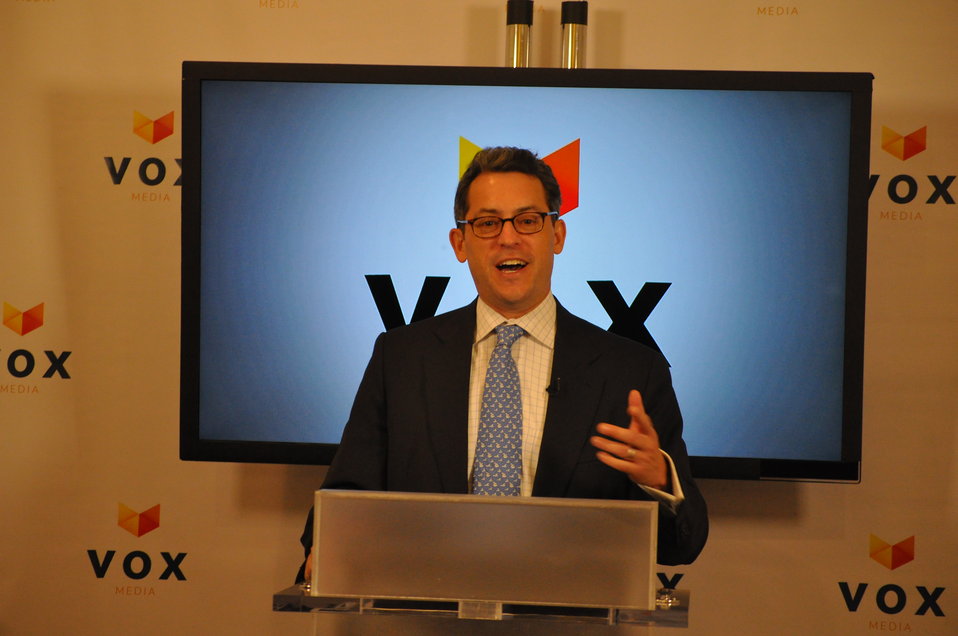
Broadband Challenges and Opportunities, at Vox Media - DSC 0687